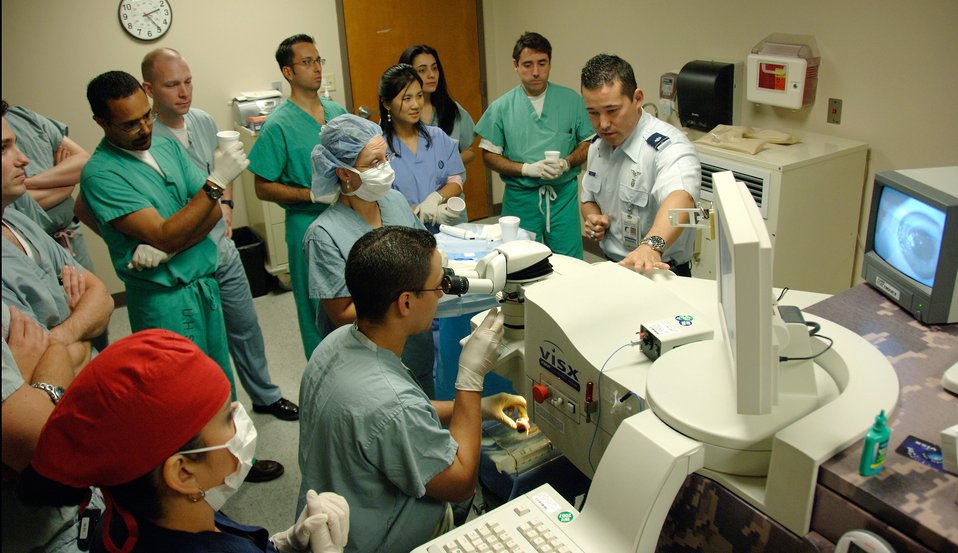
Training at WHMC

Lt. Col. (Dr.) Charles Reilly (right) instructs ophthalmology residents from Wilford Hall Medical Center, Brooke Army Medical Center and the University of Texas Health Science Center May 9 at the Joint Warfighter Refractive Surgery Center at WHMC at Lackland Air Force Base, Texas. Dr. Reilly is the consultant to the Air Force Surgeon General for Refractive Surgery and the Air Force?s only certified physician trainer for refractive surgery.